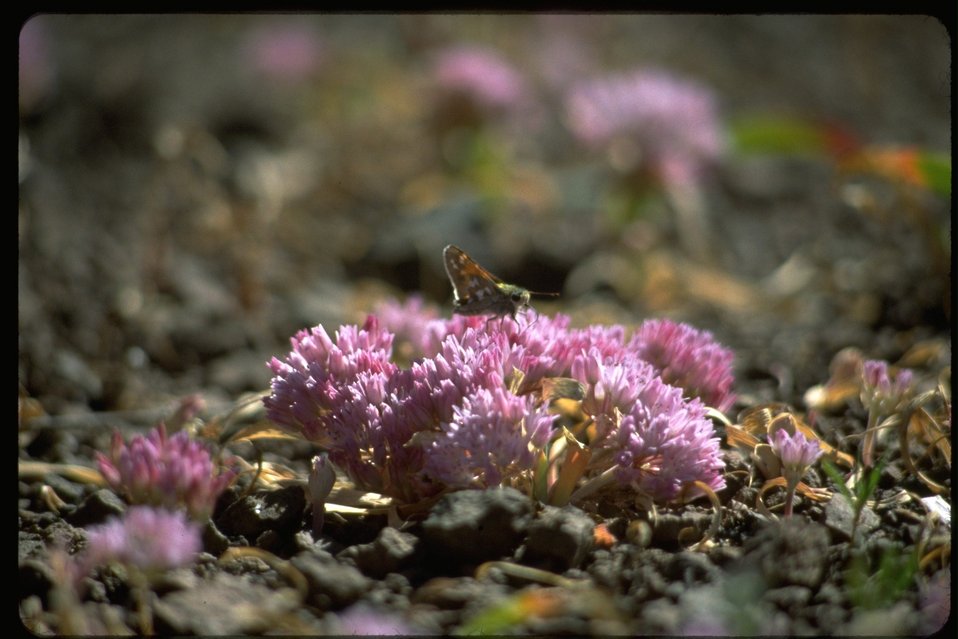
Close up shot of onion wildflower.